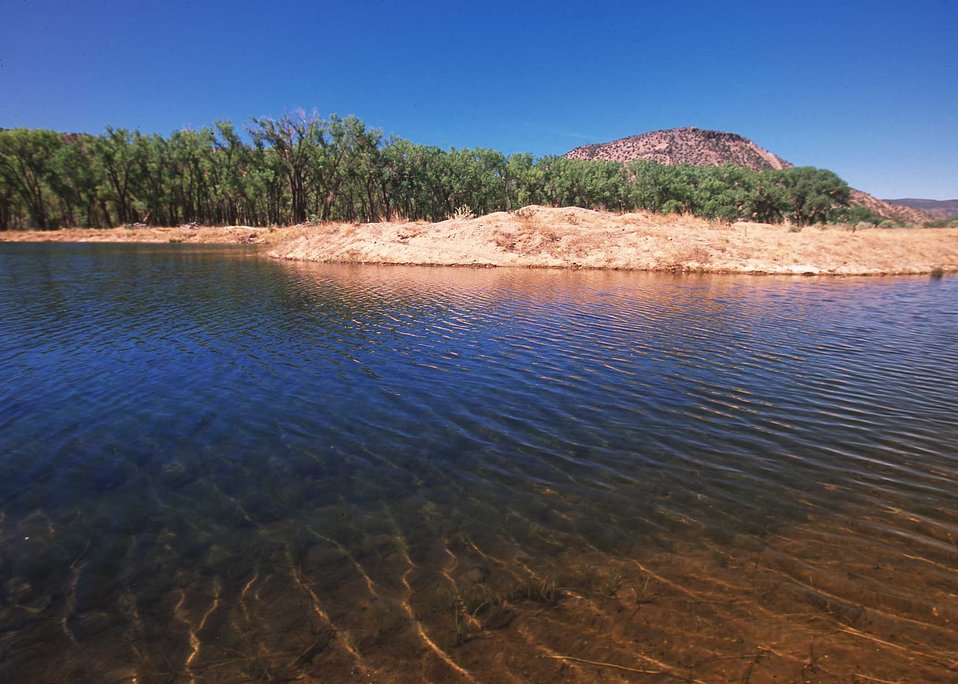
Wetland pond in Sante Fe County installed with NRCS assistance.